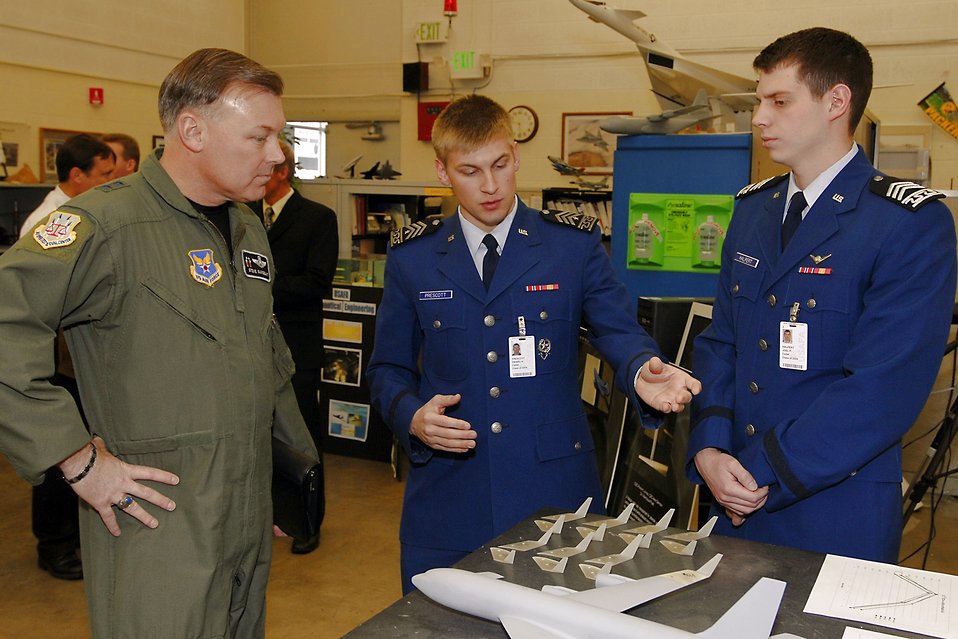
Air Force officials launch new mentoring program

Maj. Gen. Stephen T. Sargeant (from left) listens as U.S. Air Force Academy cadets explain what they are working on during his tour of Academy astronatutics classes and laboratories March 17 at the Academy in Colorado Springs, Colo. General Sargeant is the Air Force Operational Test and Evaluation Center commander from Kirtland Air Force Base, N.M.